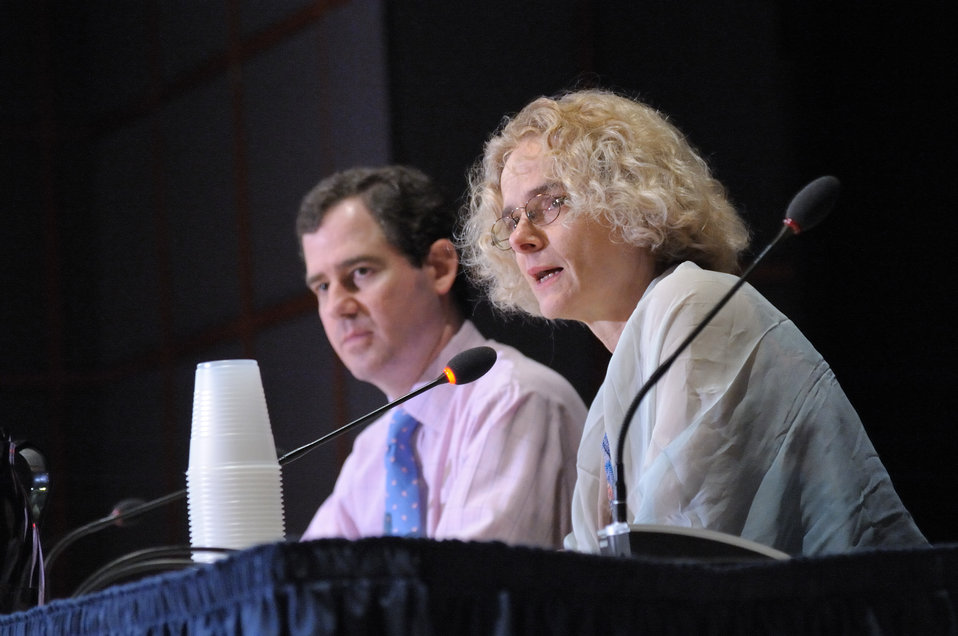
Panelists2 - APP Aug 2011

Expert panelists give their reactions following actors’ readings at NIDA’s Addiction Performance Project, held Aug 5 on the NIH Campus
(Pictured L-R: Dr. Paul Christo, pain medicine specialist at Johns Hopkins Medicine and Dr. Nora Volkow, NIDA Director)